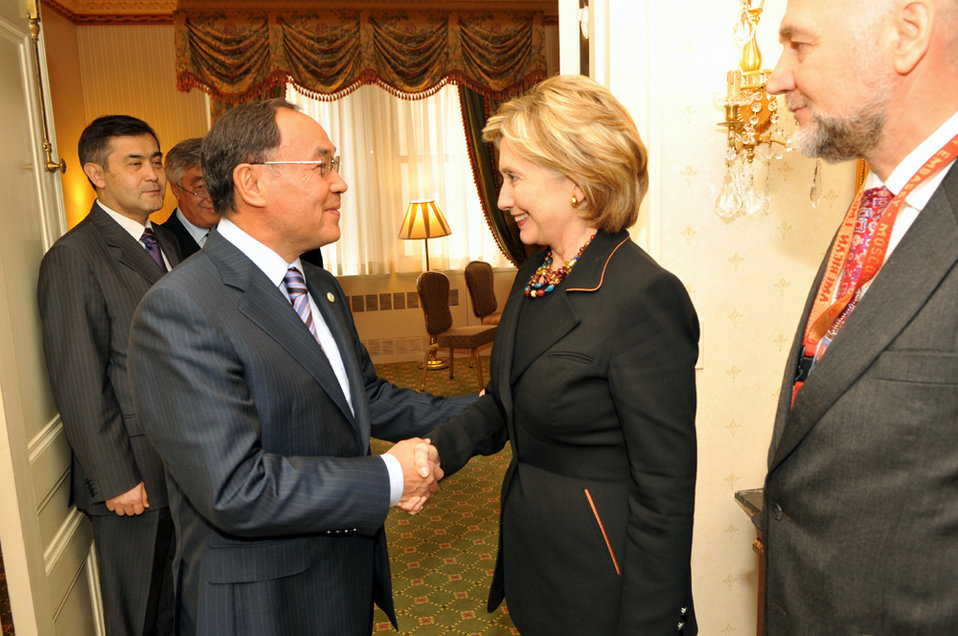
UNGA 2009: Secretary Clinton Meets With Kazakhstani Foreign Minister

U.S. Secretary of State Hillary Rodham Clinton meets with Kazakhstani Foreign Minister Kanat Saudabayev at the Waldorf Astoria hotel in New York City, New York September 26, 2009.